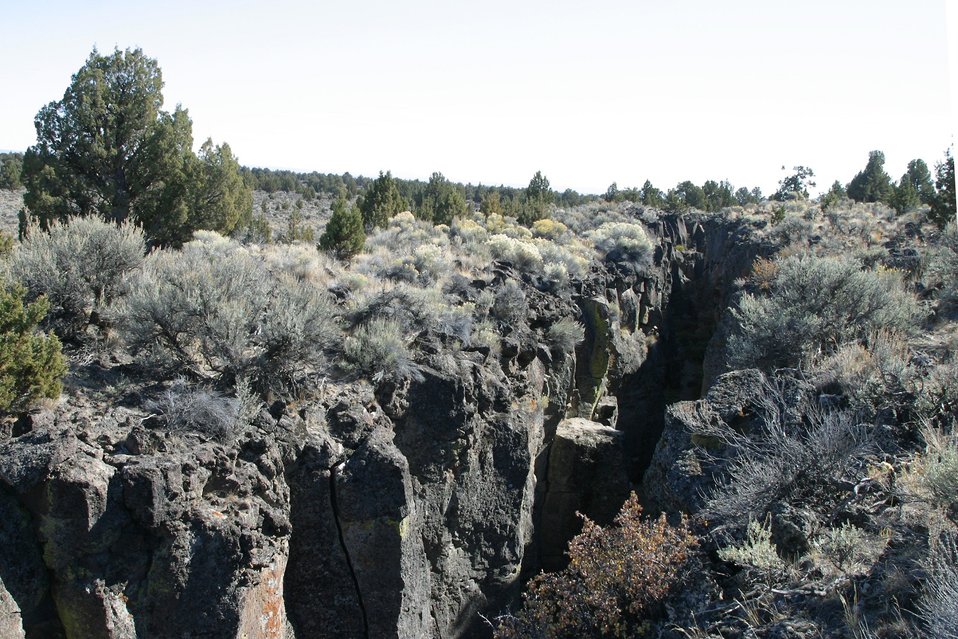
Ground level view of Crack-in-the-Ground a lava fissure about 2 miles long and 70 feet deep. It is along BLM's Christmas Valley Back Country Byway in Central Oregon.